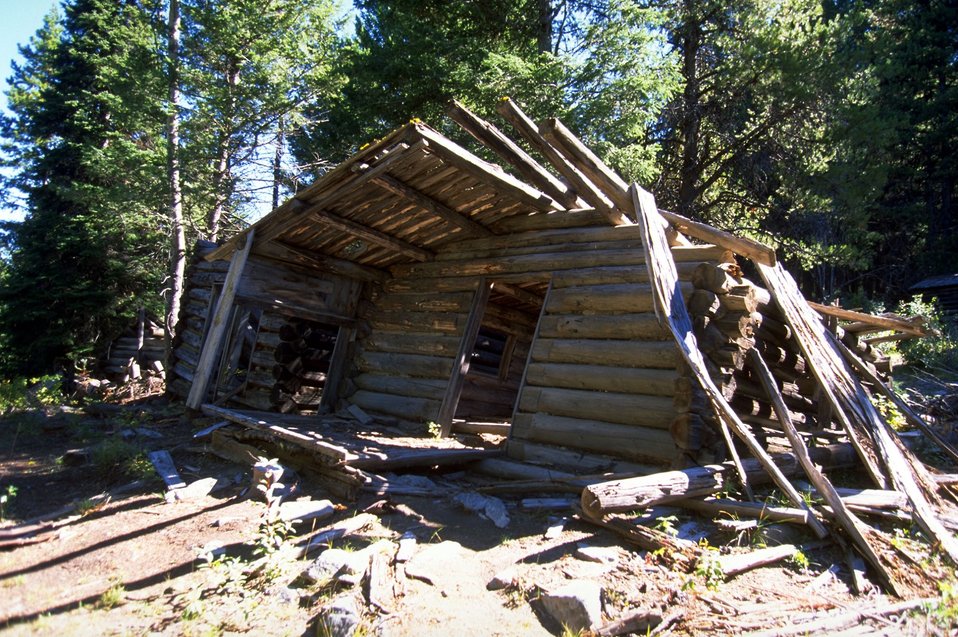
Coloma Ghost Town ruins